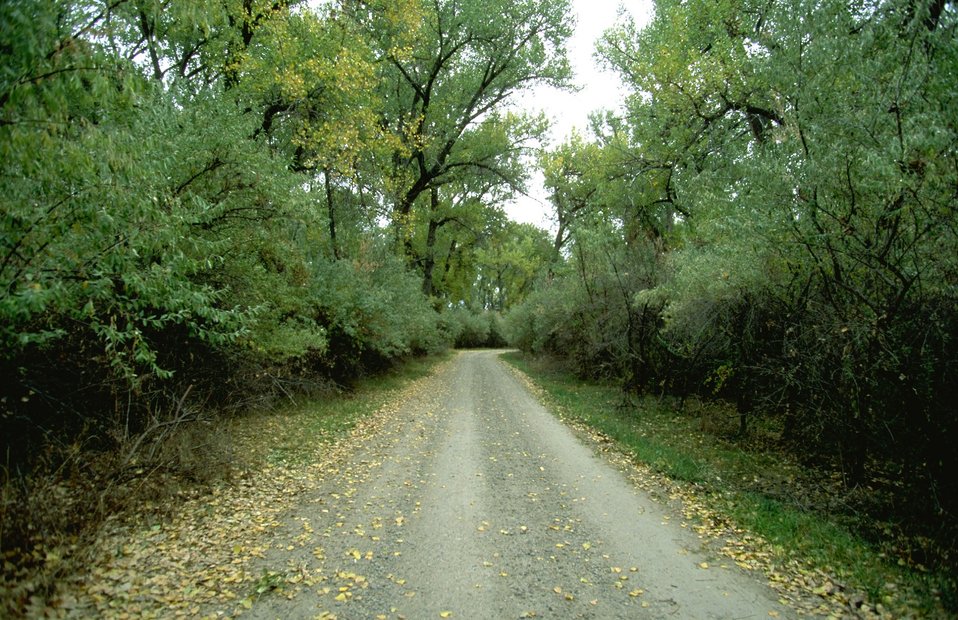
Access road to Howrey Island Boat Ramp